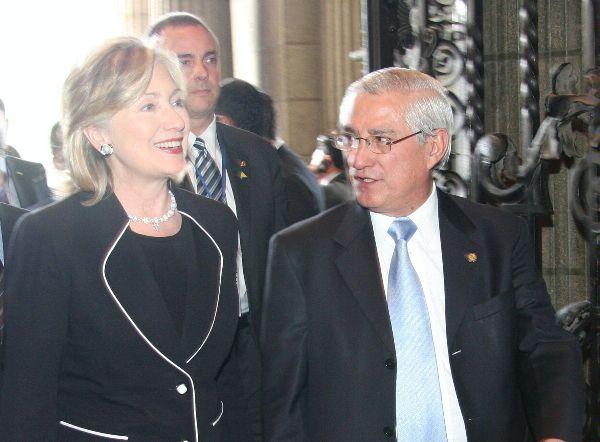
Secretary Clinton With Guatemalan Foreign Minister Haroldo Rodas

U.S. Secretary of State Hillary Rodham Clinton speaks with Guatemalan Foreign Minister Haroldo Rodas. Also featured in the photo are U.S. Ambassador Stephen McFarland and Assistant Secretary for Western Hemisphere Affairs Arturo Valenzuela
in Guatemala City, Guatemala, March 5, 2010.